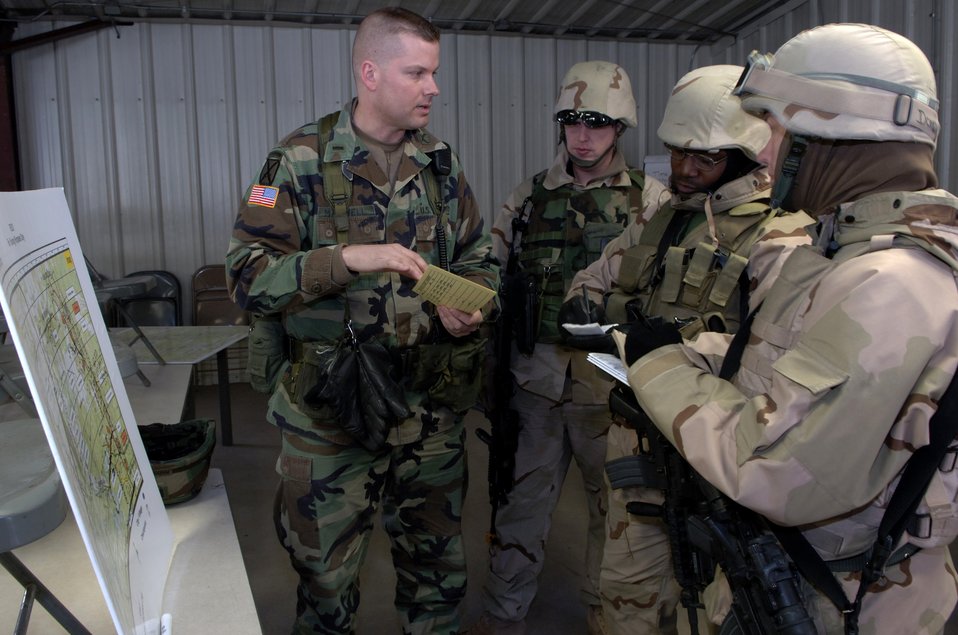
Joint basing

Army 1st Lt. Matthew Maxwell (left) briefs Airmen on a convoy route during a training mission at Fort Dix, N.J., Friday, March 3, 2006. McGuire Air Force Base, Fort Dix and Lakehurst Naval Air Engineering Station have merged to become what some are calling a